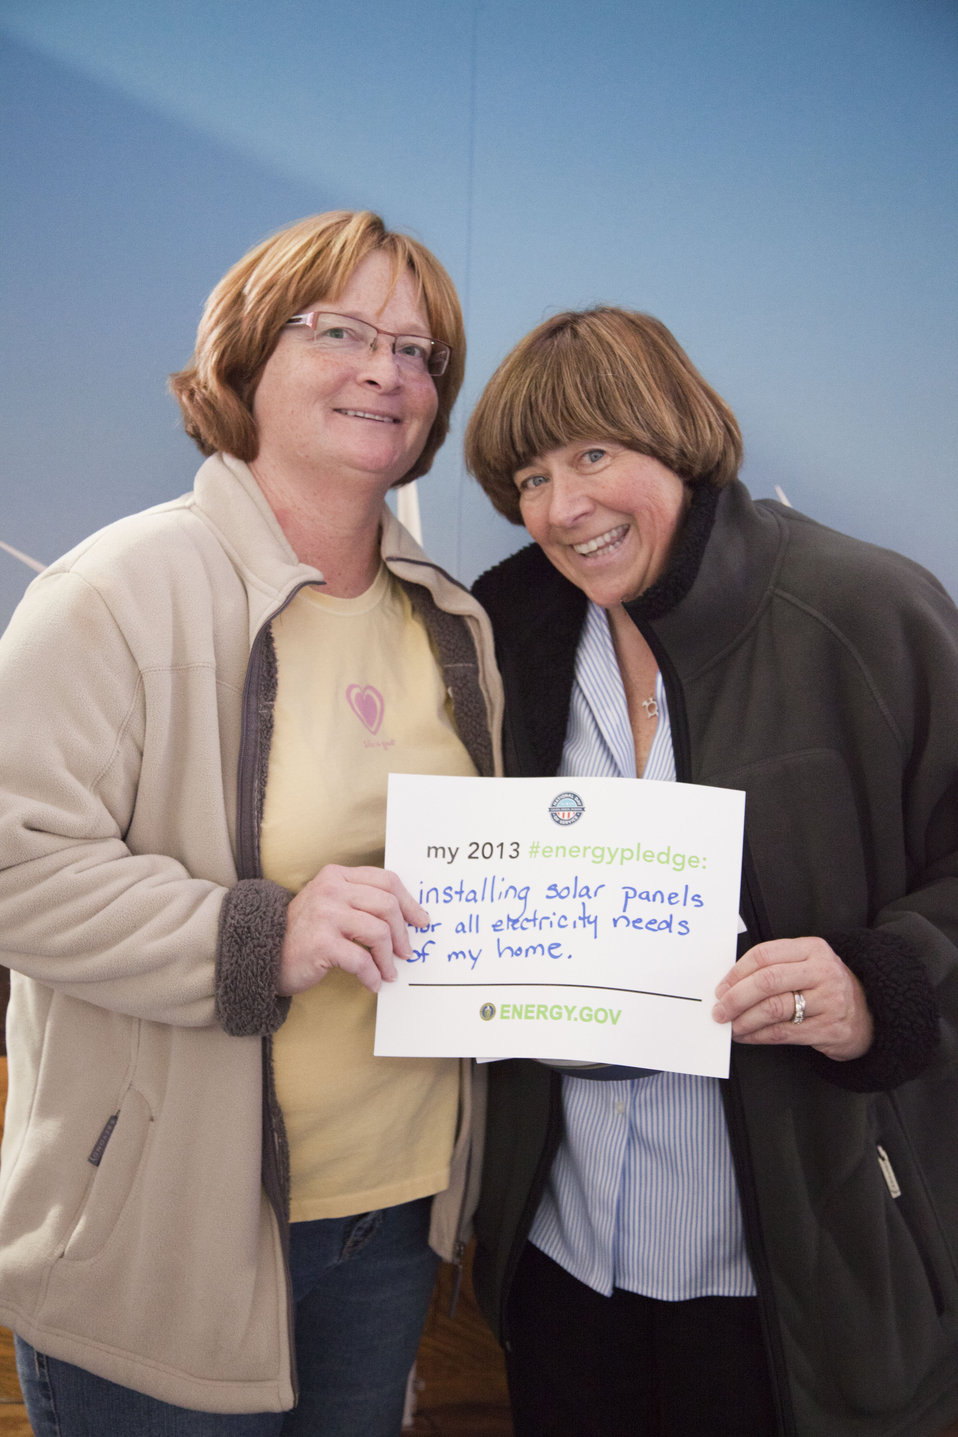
What's your #energypledge?